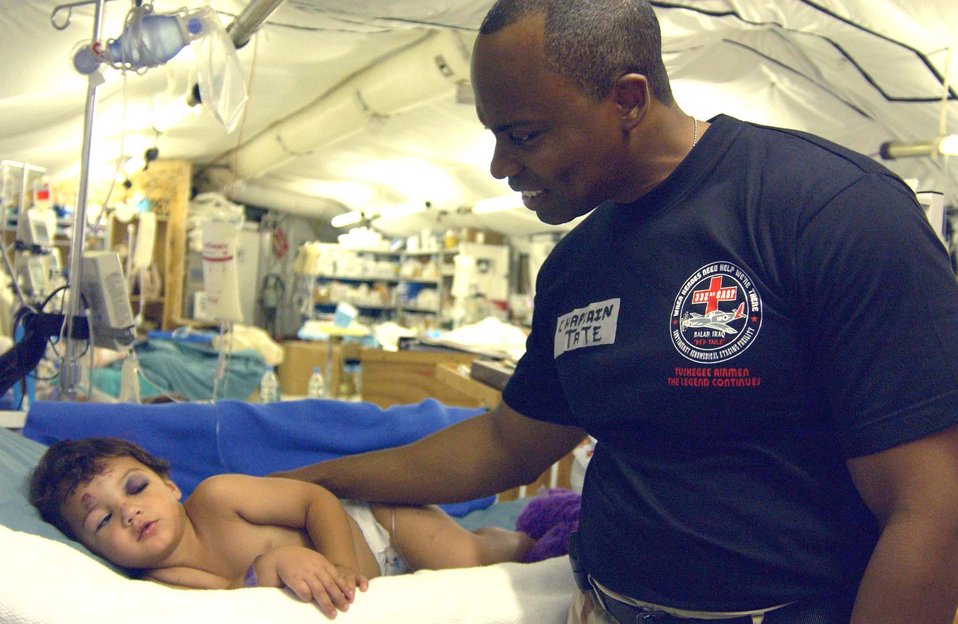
Airmen stay in spiritual shape in combat zone

Chaplain (Capt.) Jose Tate comforts an Iraqi child at the Air Force Theater Hospital at Balad Air Base, Iraq. Chaplain Tate is specifically trained to provide the hospital's patients and staff spiritual support, services and counseling. He is assigned to the 332nd Air Expeditionary Wing.